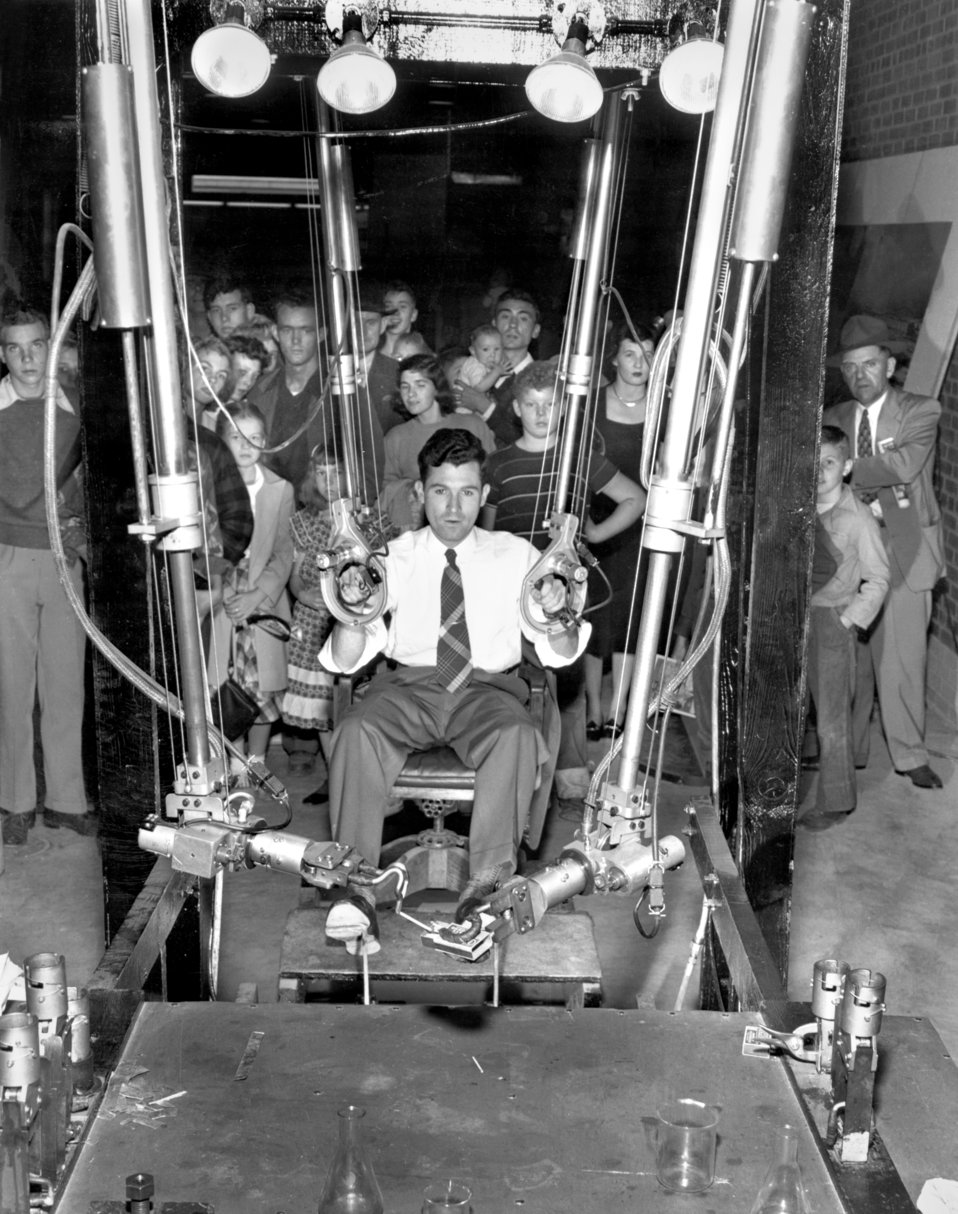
Mechanical Hands 1949 Oak Ridge

MED176-1 DOE photo Ed Westcott 1949 Exhibit in 1916 Warehouse Applications of Atomic Energy Oak Ridge Tennessee